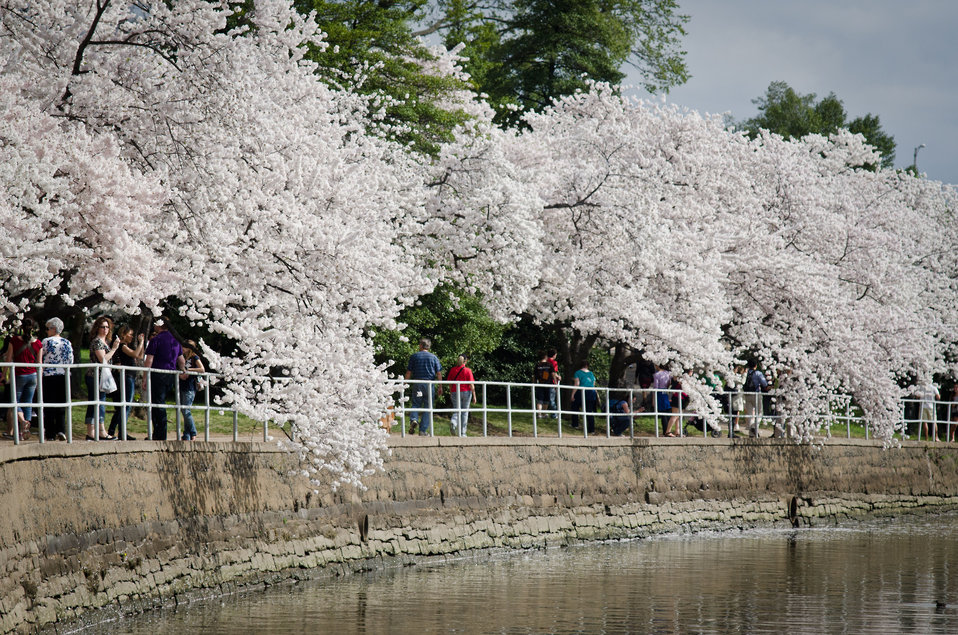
Cherry blossoms at the Tidal Basin in Washington, D.C., on Tuesday, March 20, 2012.